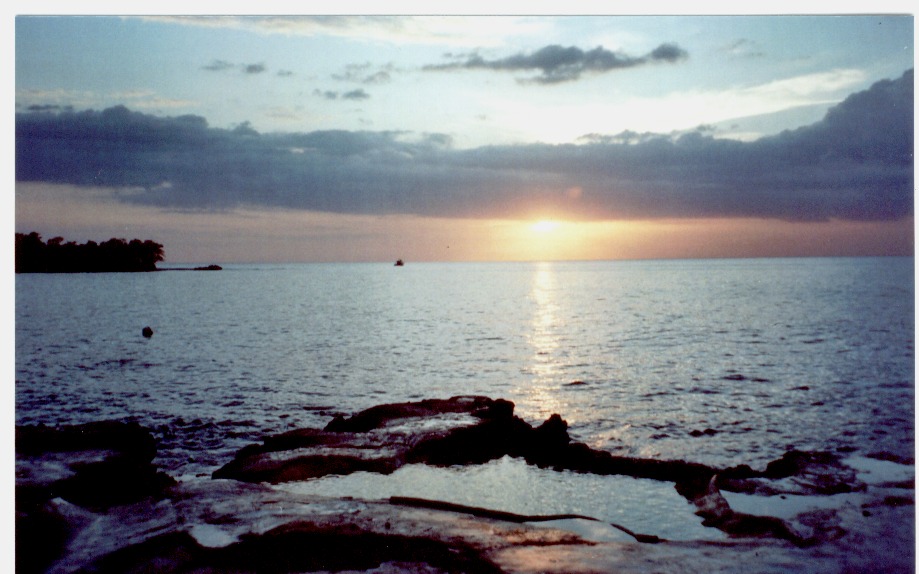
Uploaded by request of Carla Mattingly

Taken in Pointe Village, Lava Rock Pools, Negril, Jamaica

Natural Beauty, Peaceful, Nature at its finest